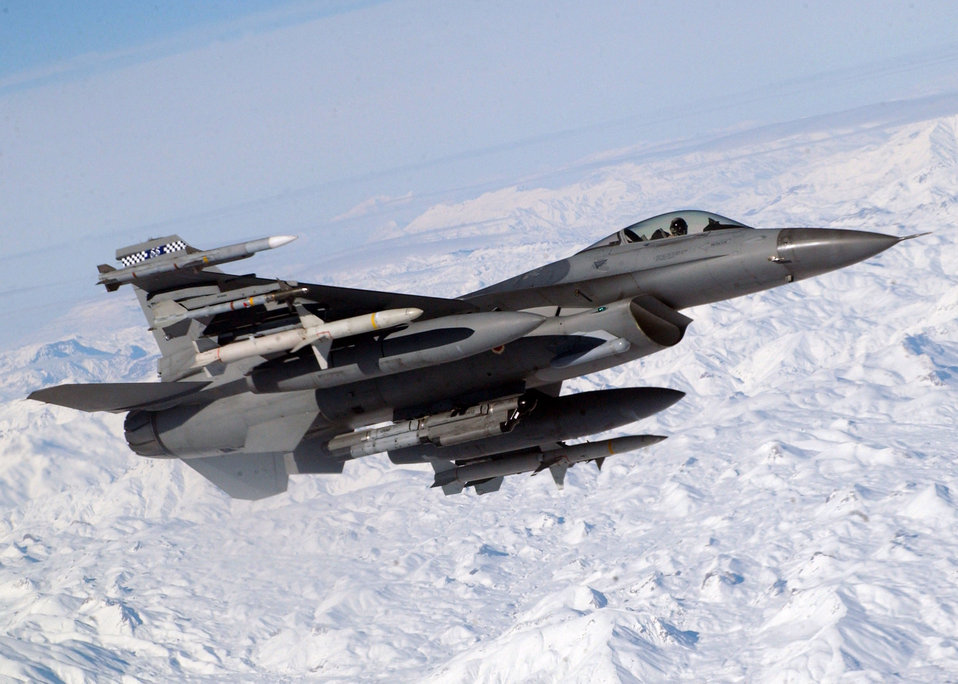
Snow capped mission

OPERATION NORTHERN WATCH -- An F-16 C/J Fighting Falcon of the 55th Expeditionary Fighter Squadron, Shaw Air Force Base, S.C., flies alongside a KC-135R Stratotanker during an Operation Northern Watch mission. The aircraft and pilot are part of the 50 United Kingdom and U.S. aircraft and more than 1,400 U.K., Turkish and U.S. troops assigned to the Combined Task Force, Operation Northern Watch.